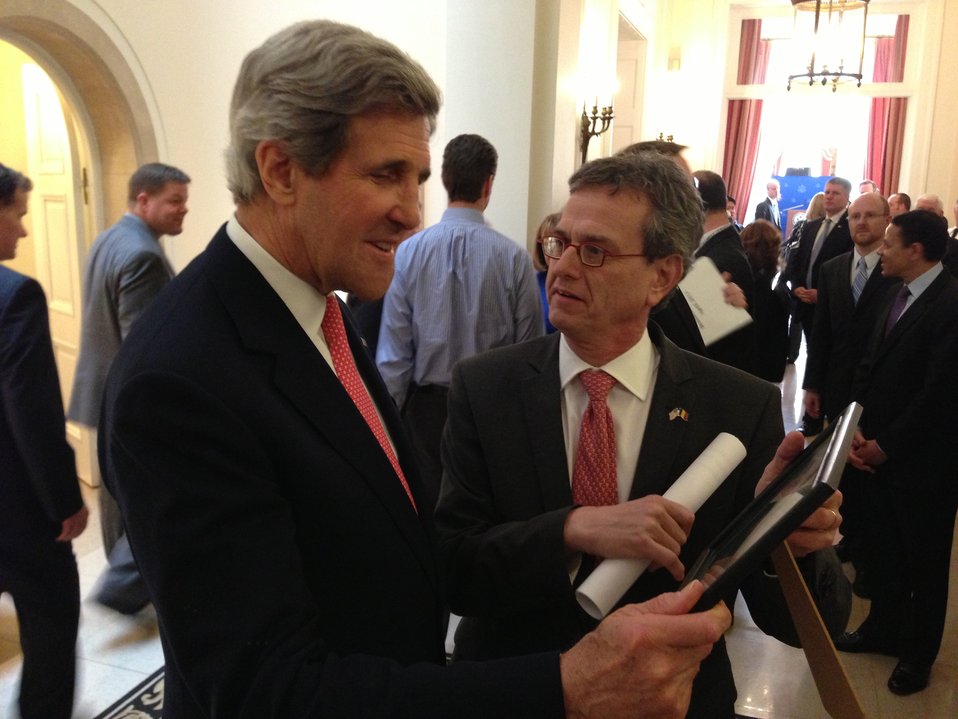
Ambassador Gutman Shows Secretary Kerry a Photo

U.S. Secretary of State John Kerry is shown a photograph by U.S. Ambassador to the Kingdom of Belgium Howard Gutman of the Secretary and President Barack Obama serving together in the U.S. Senate, during a visit to the ambassador’s residence in Brussels, Belgium, April 22, 2013.